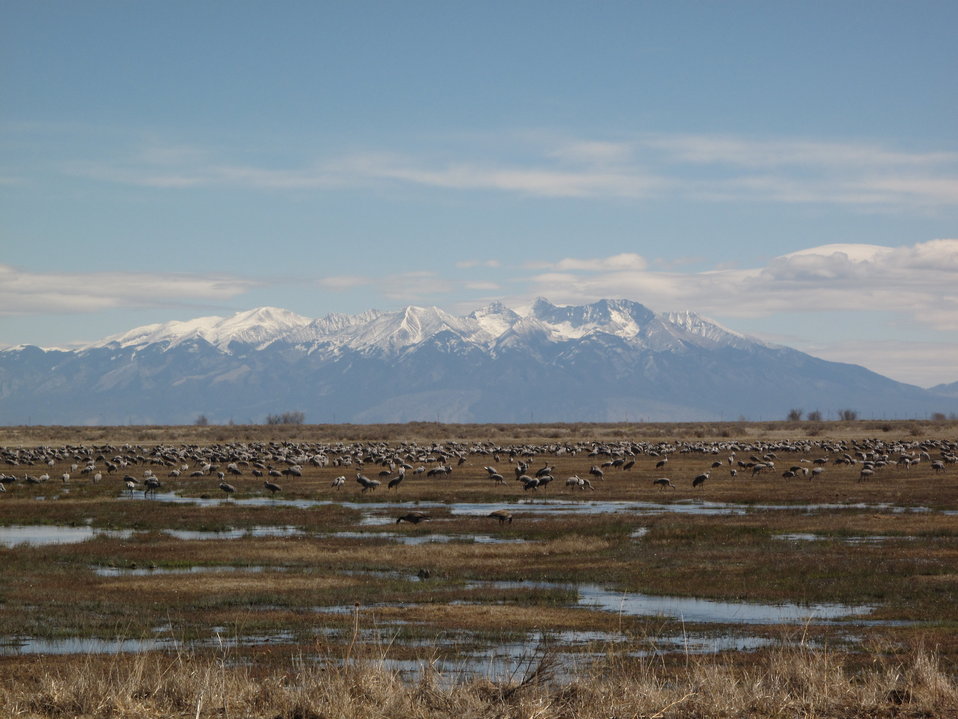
Monte Vista National Widllife Refuge Hosting Cranes

The Monte Vista National Wildlife Refuge serves as a stopover point for cranes during their northward and southward migrations each year. The birds using the Refuge nest primarily in Montana, Idaho and Wyoming and spend winters in New Mexico, Arizona, and Mexico. However, some cranes that visit the Refuge may nest as far away as Alaska and western Siberia.